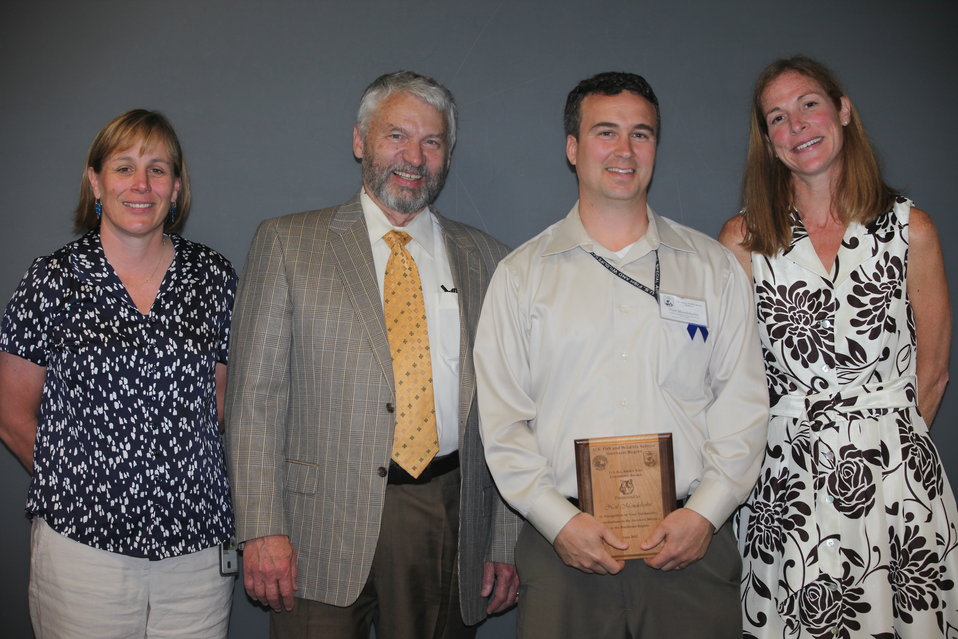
Neil Mendelsohn, Office of Law Enforcement, recieved a Special Eagle Award.
From left to right: Deputy Regional Director Deb Rocque, Deputy Director Rowan Gould, Neil Mendelsohn, and Regional Director Wendi Weber